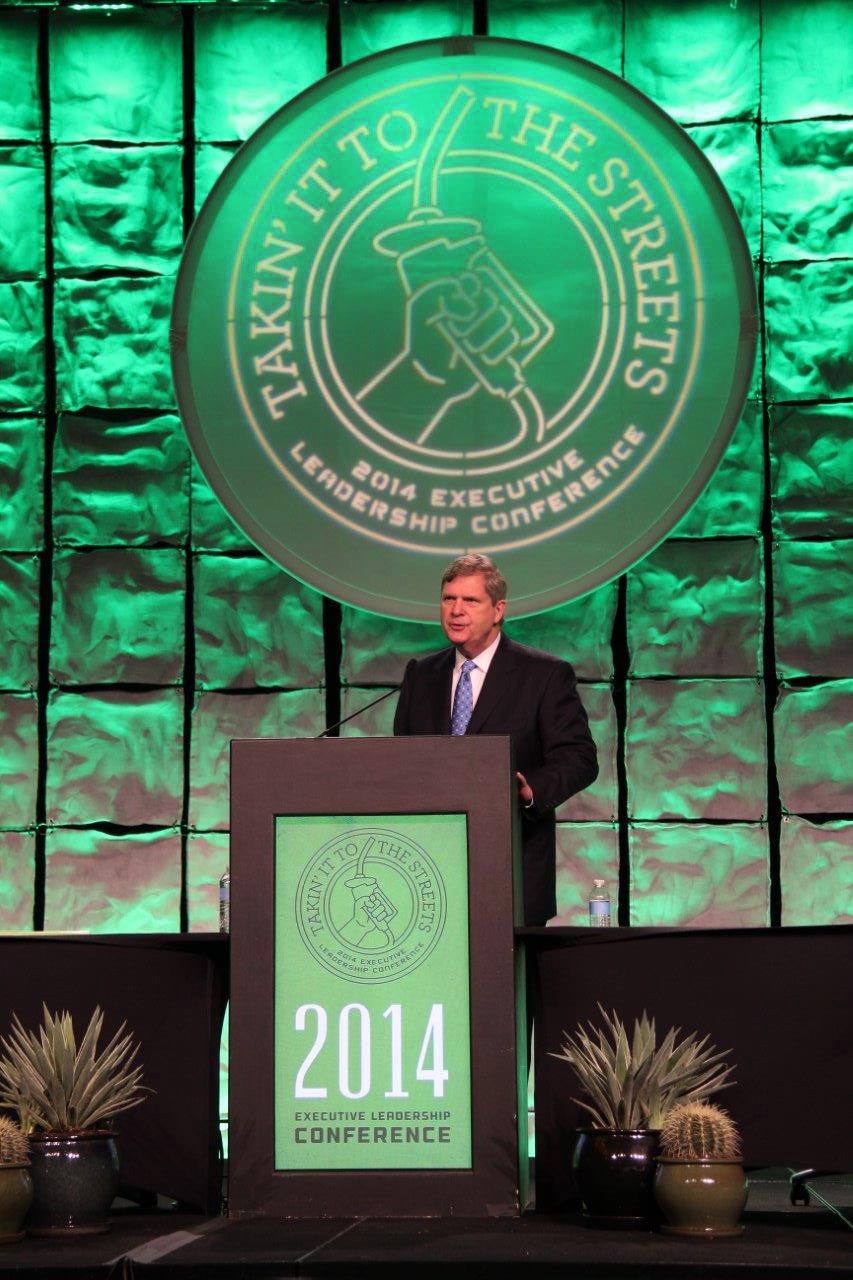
Agriculture Secretary Tom Vilsack speaks at the fifth annual executive leadership conference 'Taking it to the Streets' at the JW Marriott Desert Ridge Hotel in Phoenix, AZ on Feb. 27, 2014.